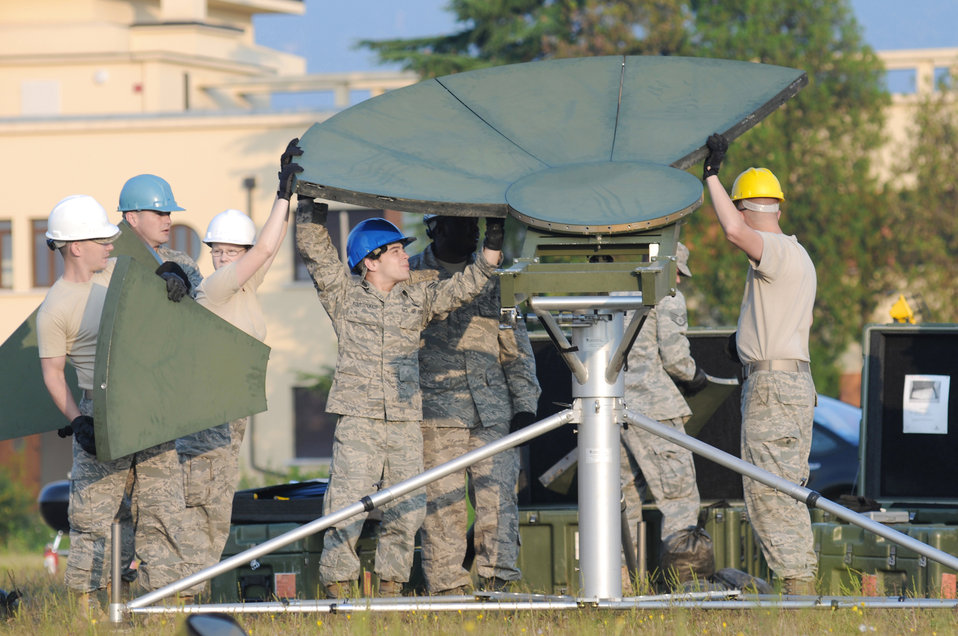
Comm Training

Airmen from the 1st Combat Communications Squadron at Ramstein Air Base, Germany, set up a satellite dish Sept. 22, 2009, during a training exercise at Aviano AB, Italy. The training is in preparation for the largest transformation in the history of Air Force communications when 15 communications Air Force Specialty Codes transition into 11 new cyberspace support specialties.